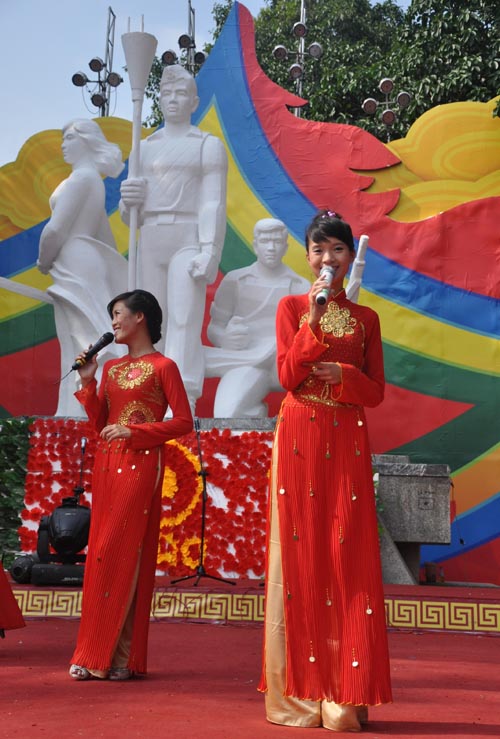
Singers perform in Hanoi during the millennial celebrations.